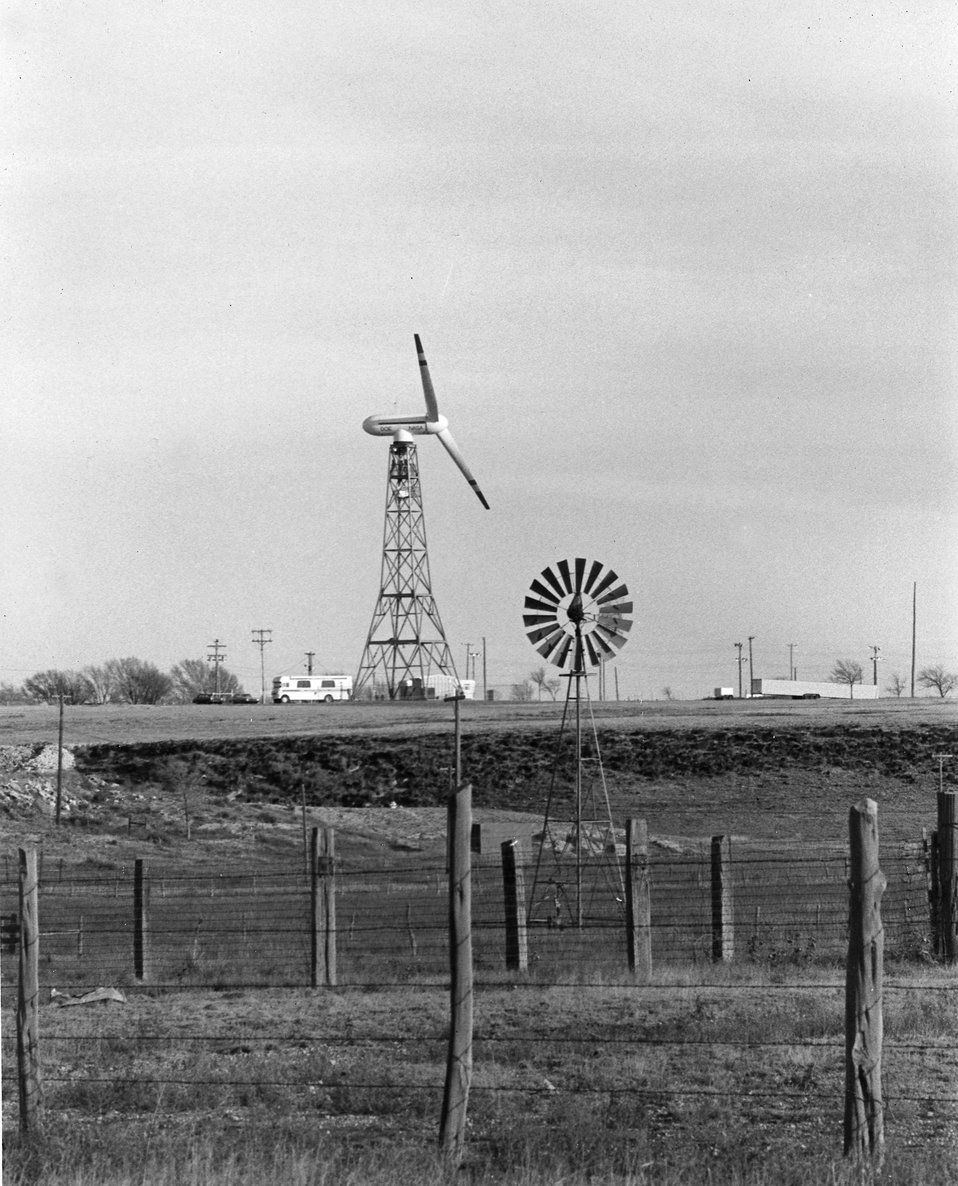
A large wind turbine generator is supplying part of the electric power used by the people of Clayton, New Mexico. c. 1978